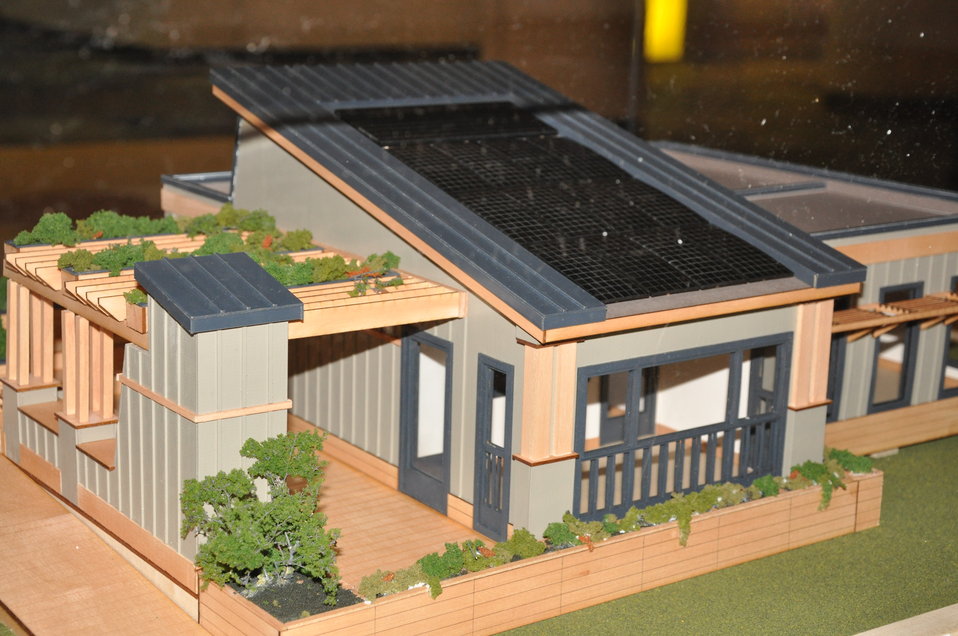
Team Tidewater Virginia